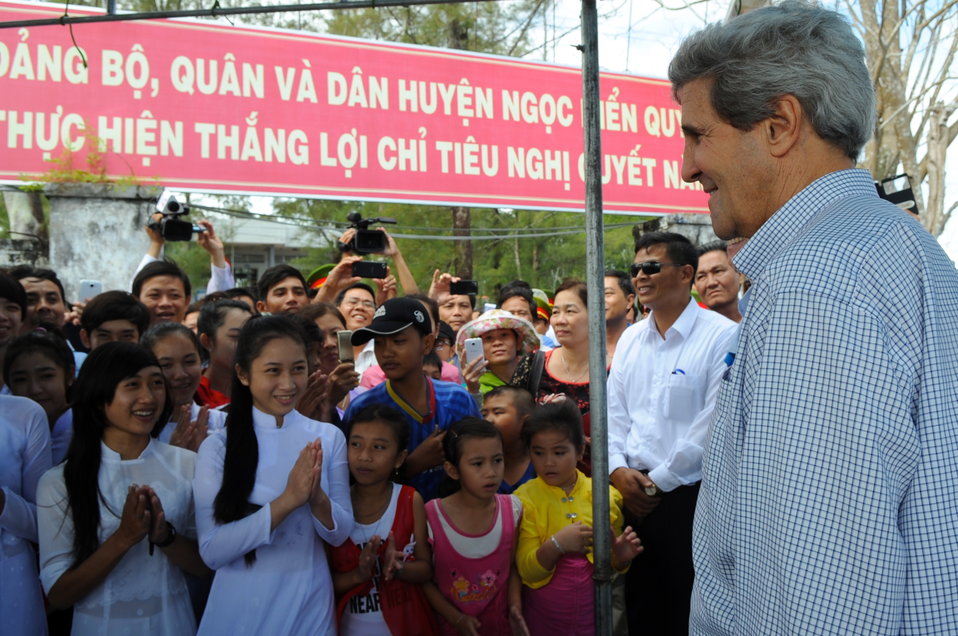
Secretary Kerry Greets Students in Mekong Delta Village

U.S. Secretary of State John Kerry greets students in the village of Kien Vang during a visit to the Mekong River Delta in Vietnam on December 15, 2013.